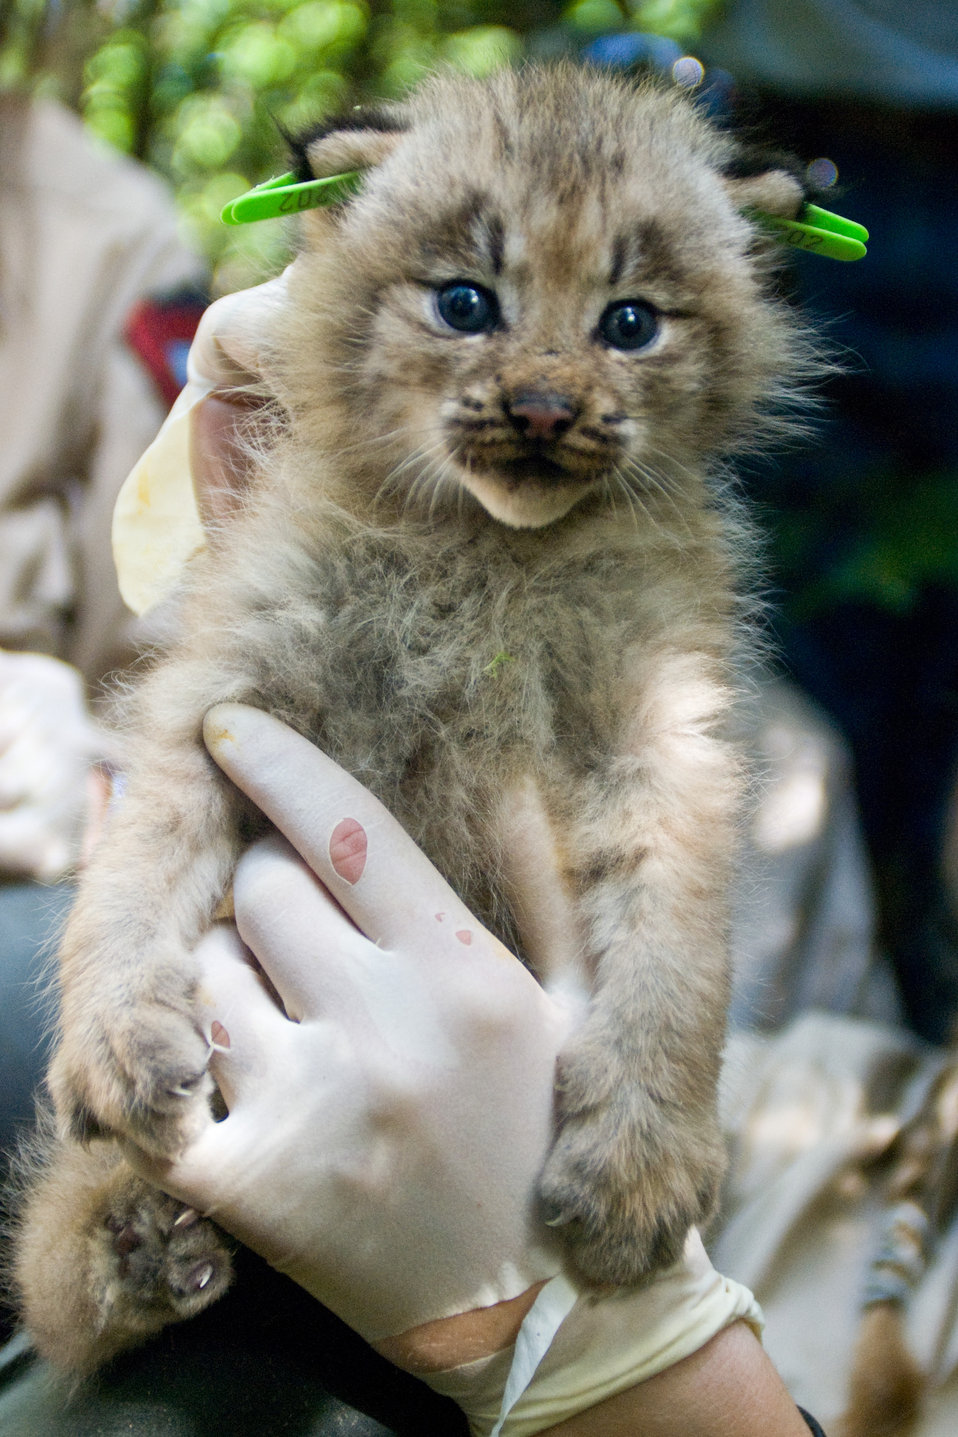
Canada Lynx kitten

A kitten after being fully processed. Documentation included a variety of measurements and documentation including registration via ear collar and RFID chip, weight, girth, length, body composition, and DNA sampling.